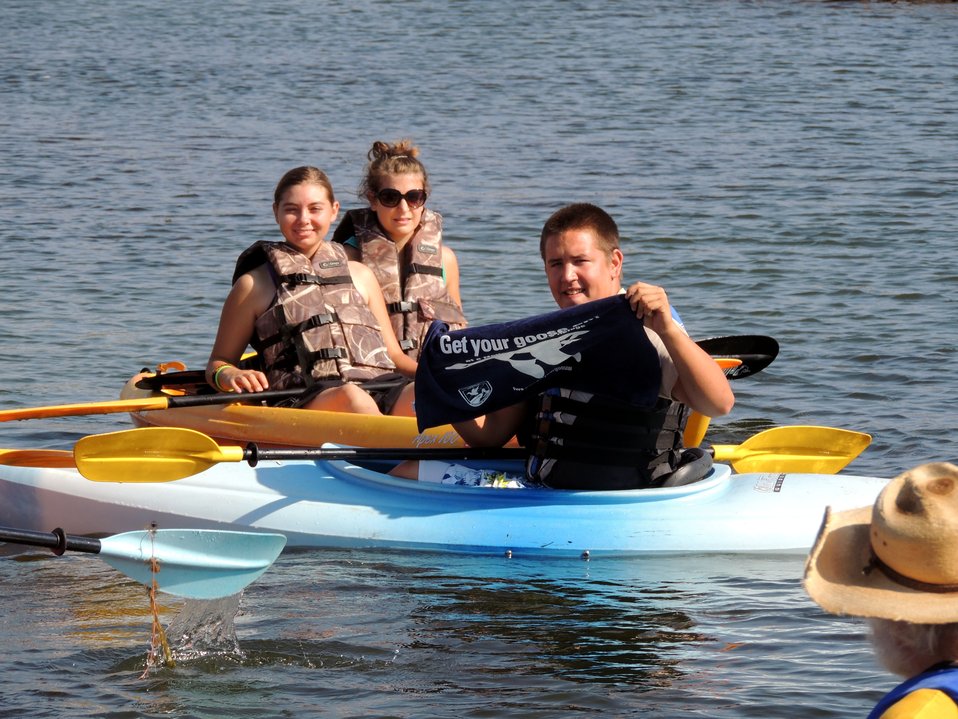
Get Your Goose On!

Wichita Mountains National Wildlife Refuge in Oklahoma.